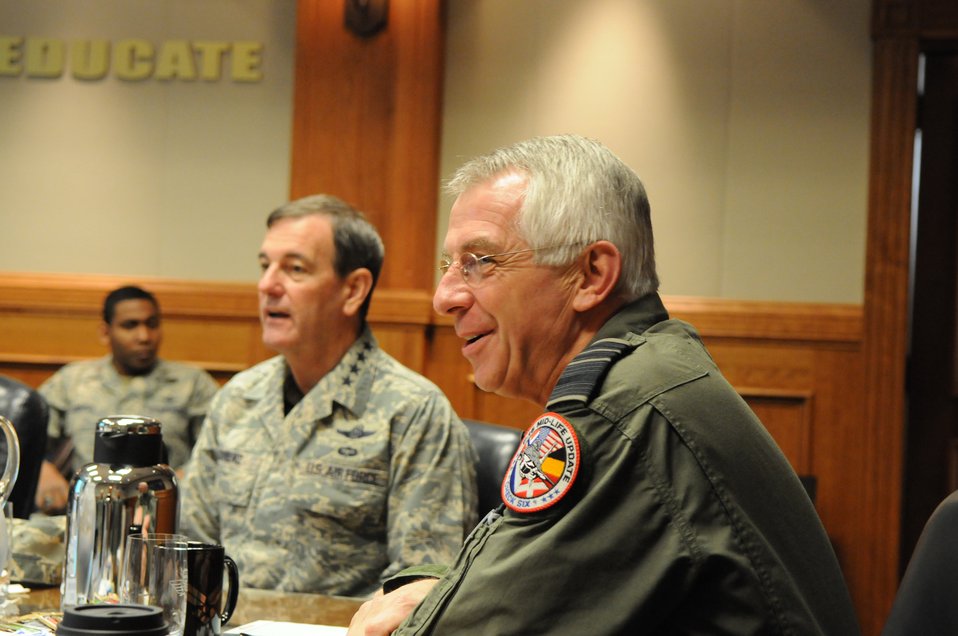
Dutch partnership emphasizes innovations in training

Royal Netherlands air force Lt. Gen. J.H.M.P. Jansen learns about innovations in Air Force training programs Feb. 15, 2010, during a visit to Randolph Air Force Base, Texas. General Jansen is the commander of the Royal Netherlands air force